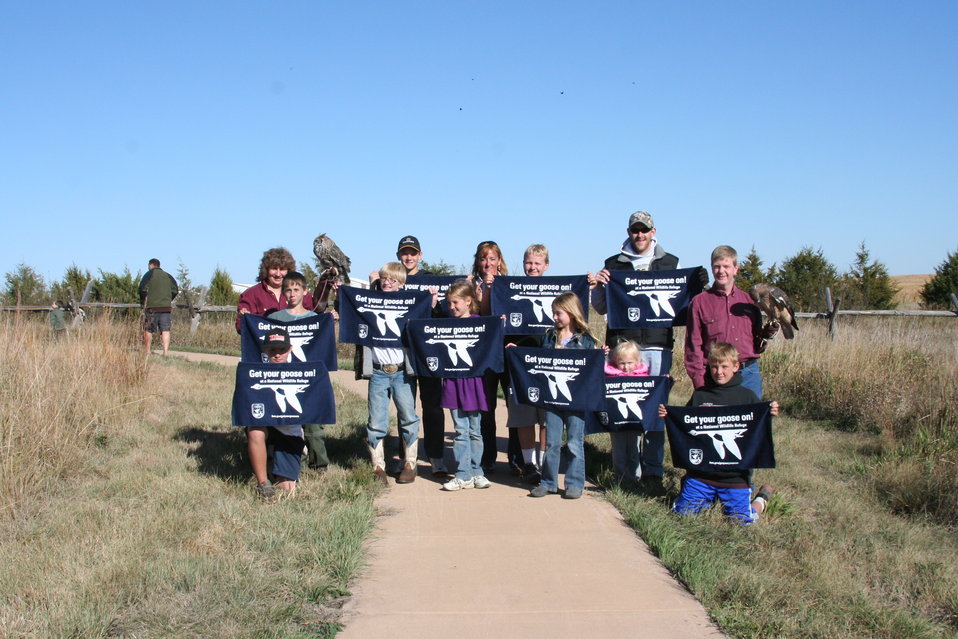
Get Your Goose On! - Raptor Style!

During Huron Wetland Management District's 2012 Prairie Festival, visitors were treated to an up close and personal look at various birds of prey.